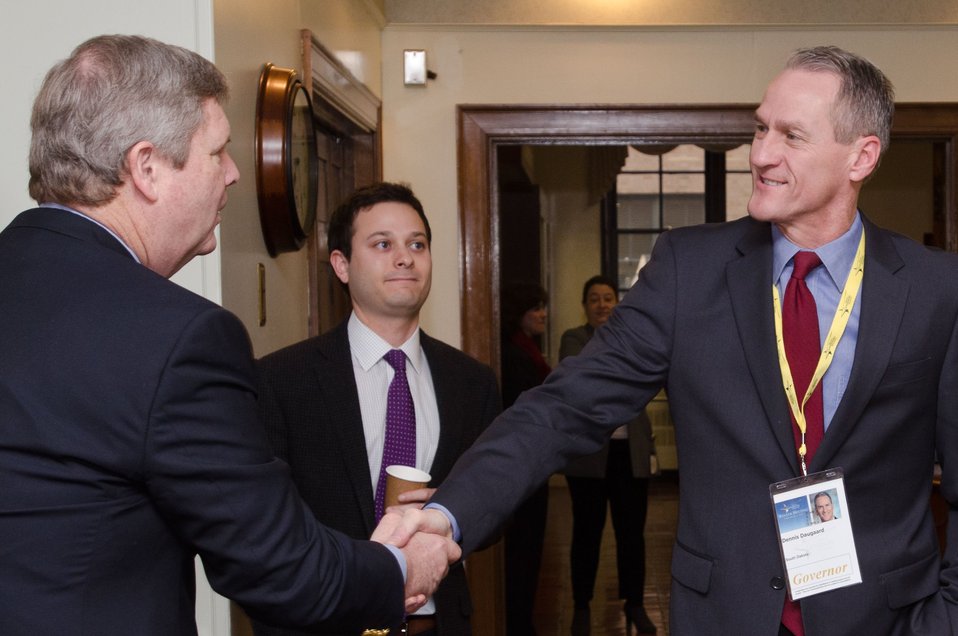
Agriculture Secretary Tom Vilsack (left) welcomed South Dakota - Governor Dennis Daugaard (right) to a breakfast for Western Governors and Federal Officials, in the Lincoln Room at the United States Department of Agriculture headquarters, in Washington, D.C., on Sunday, February 26, 2012.